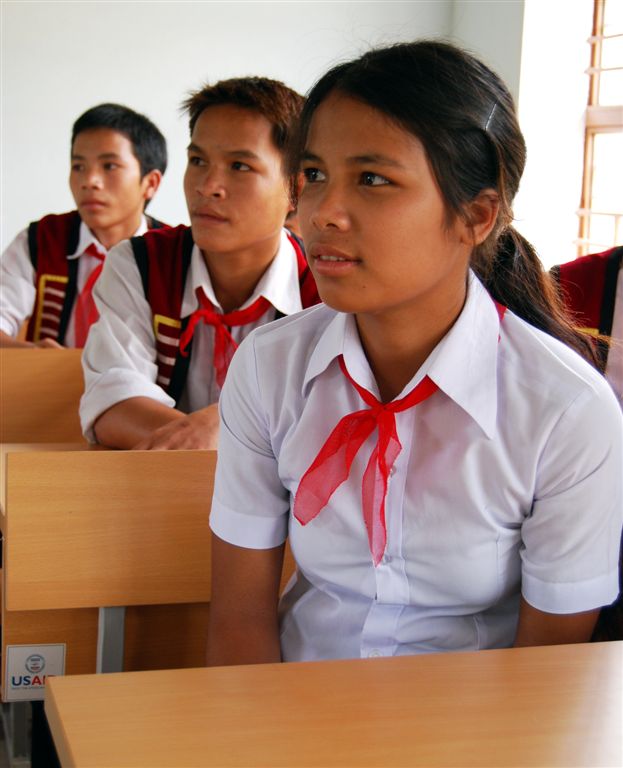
Students at Kon Ray School